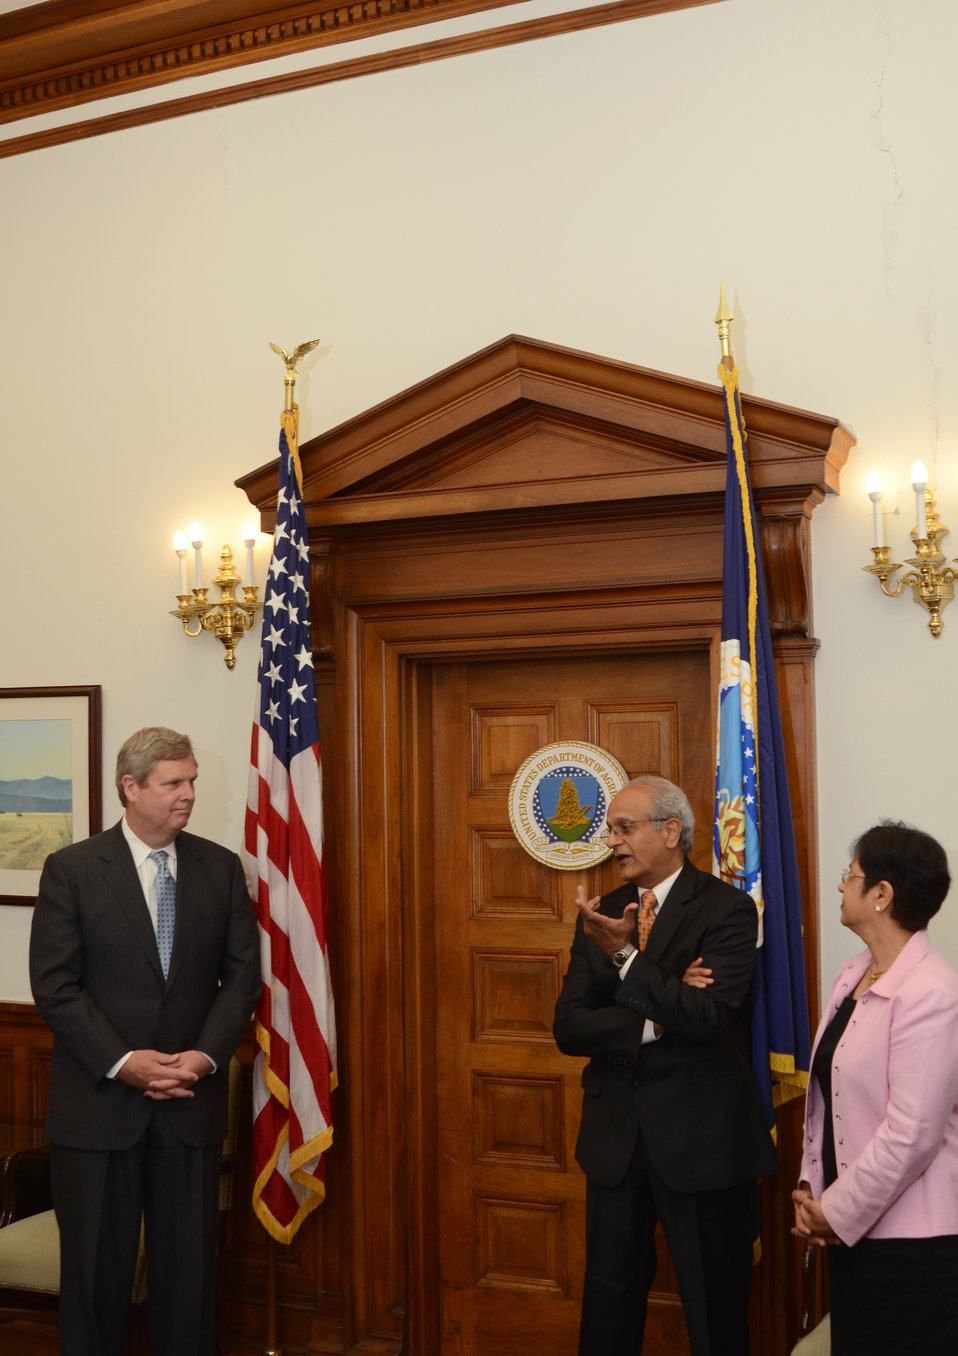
Agriculture Secretary Tom Vilsack talks with the Director, National Institute of Food and Agriculture (NIFA) Dr. Sonny Ramaswamy after swearing him in at the U.S. Department of Agriculture in Washington, D.C. on Tuesday, May 8, 2012.